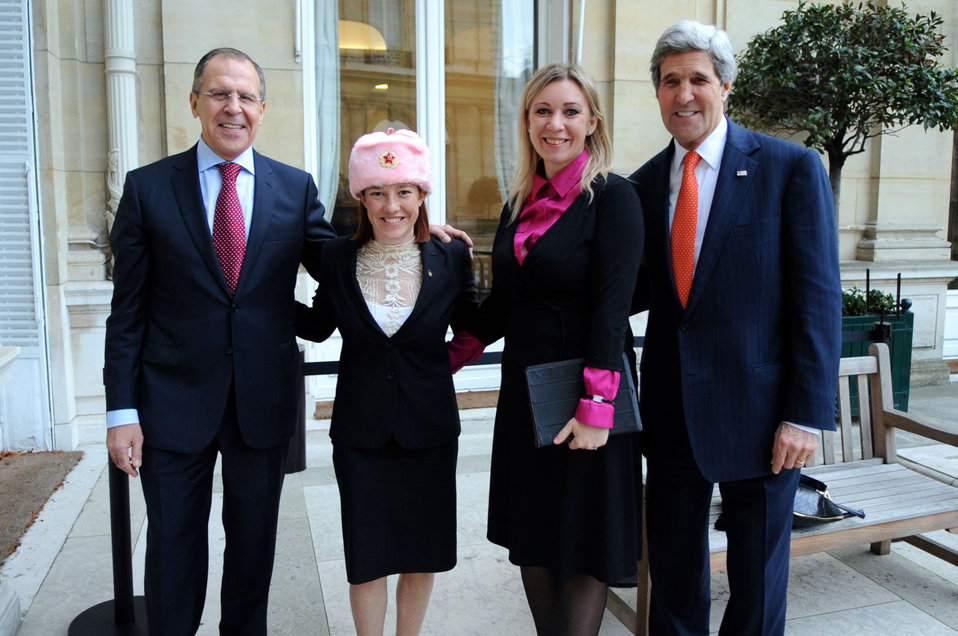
Spokesperson Psaki Poses in a New Hat With Russian Counterpart and Their Respective Bosses

U.S. Department of State Spokesperson Jennifer Psaki -- sporting a shapka, or fur hat with ear flaps, given to her by Russian counterpart Maria Zakharova -- stands with Zakharova between U.S. Secretary of State John Kerry and Russian Foreign Minister Sergey Lavrov in Paris, France, on January 13, 2014.